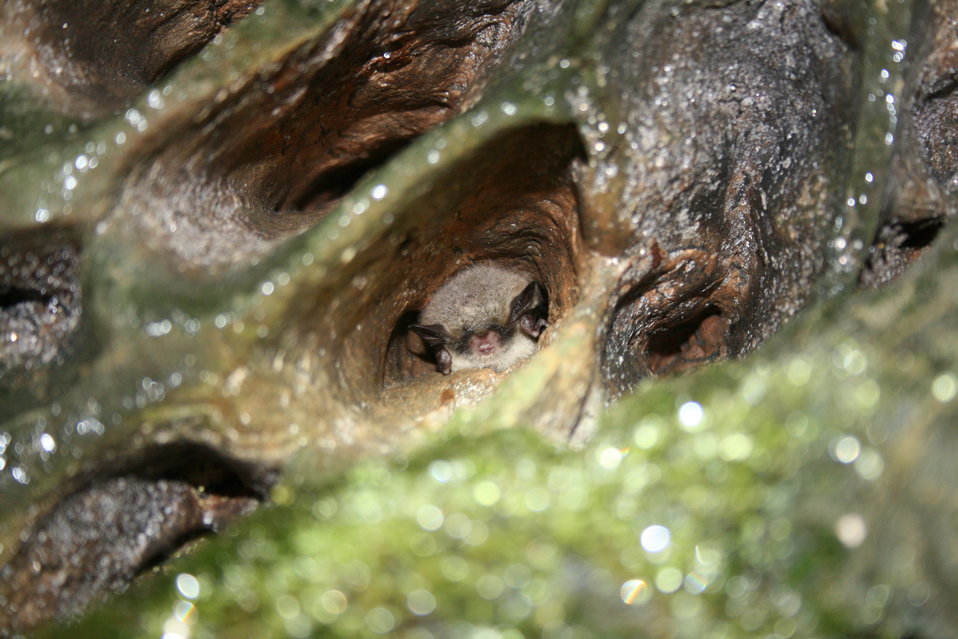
Northern long-eared bat

Hibernating Northern long-eared bat (Myotis septentrionalis)